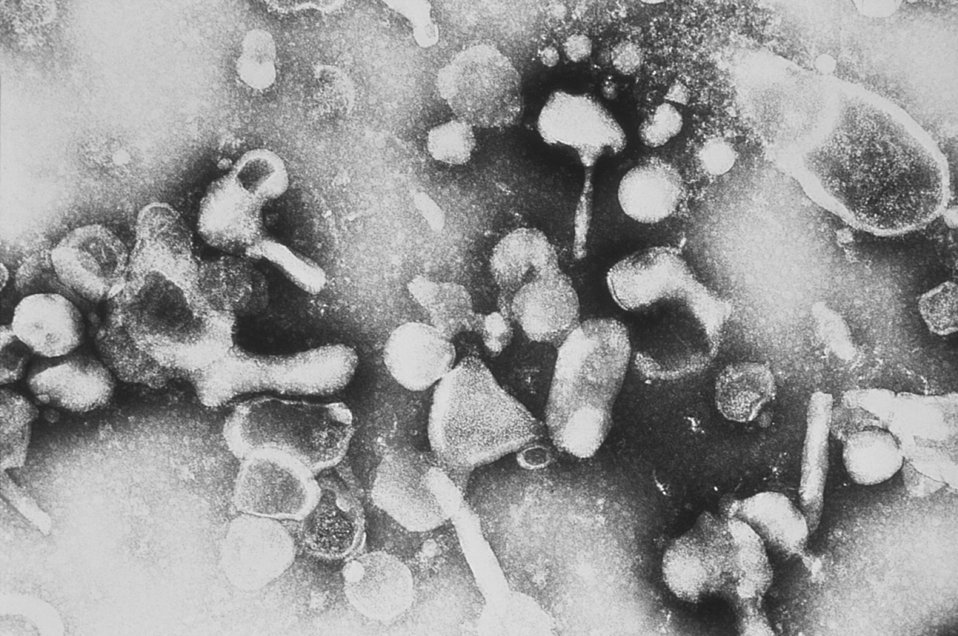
This electron micrograph depicts the retrovirus, Feline Leukemia Virus (FeLV).